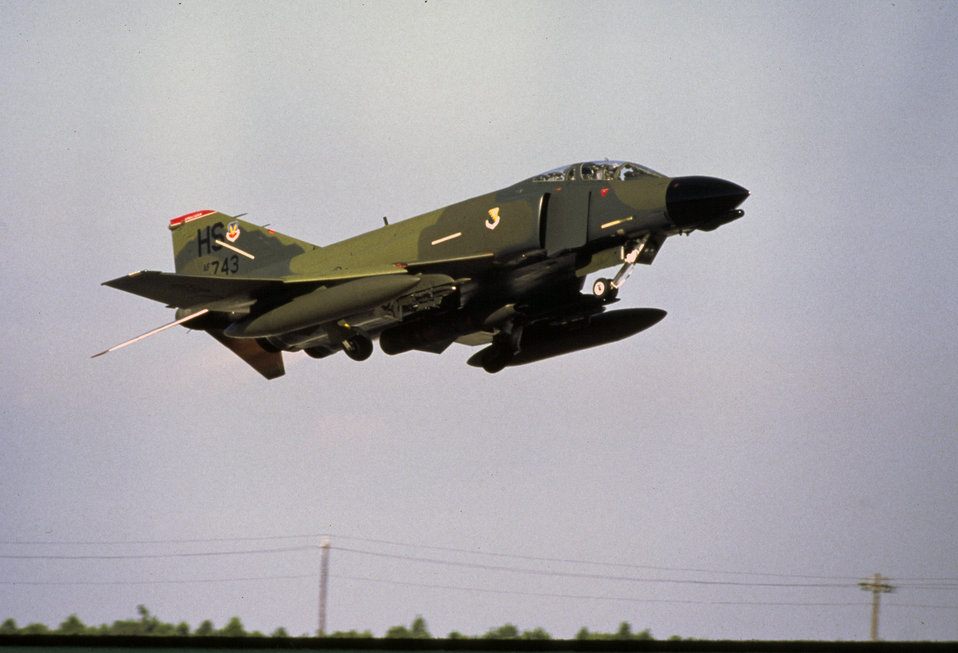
F-4 Phantom, May 1963.